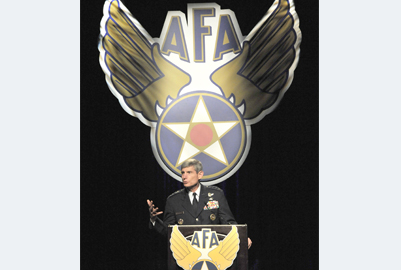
California AFA symposium

Air Force Chief of Staff Gen. Norton Schwartz speaks to attendees at the Air Force Association's 2010 Global Warfare Symposium Nov. 19, 2010, at the Beverly Hilton Hotel in Los Angeles. The topic of the general's speech was